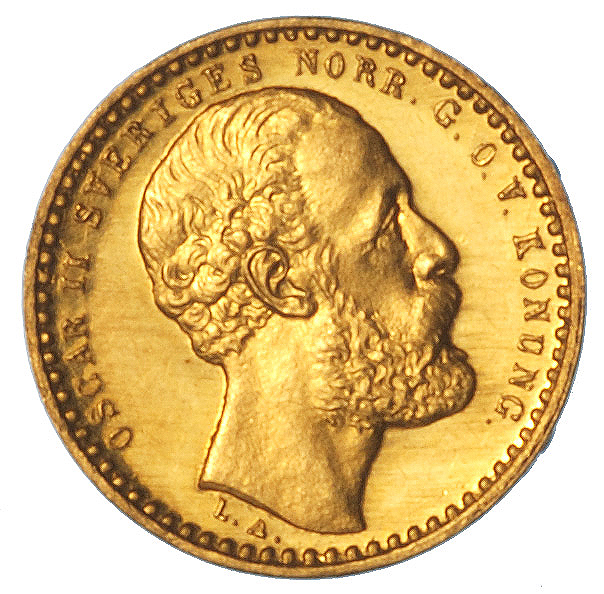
10 Öre provmynt i guld ca 1882